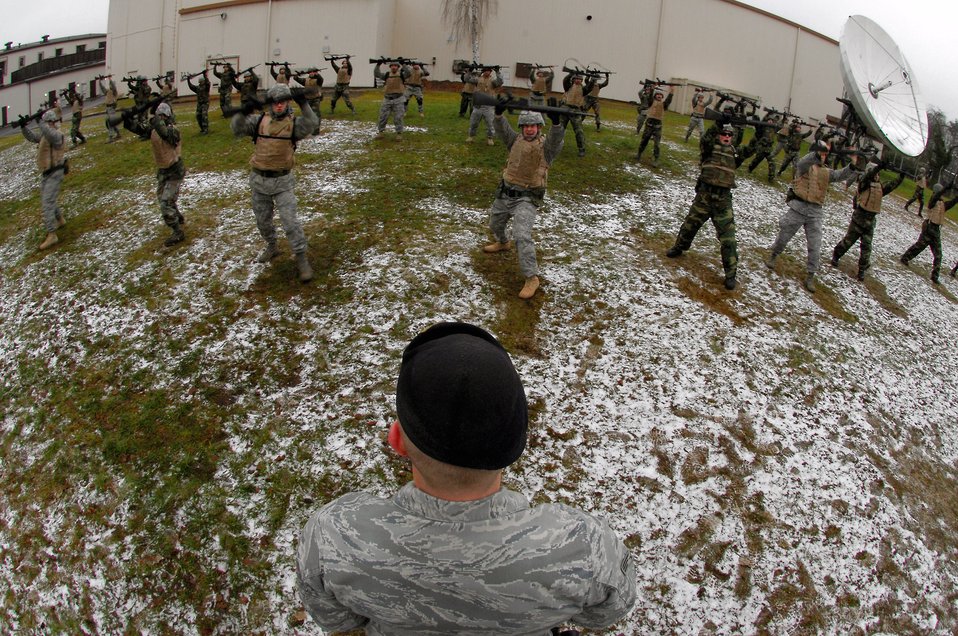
Ready!

Senior Airman Chris Bidwell, a Combat Skills Training Instructor, leads Airmen in various drills Dec. 18 at Einseidlerhof, Germany. Airmen participated in a two-day Combat Skills Training course in preparation for deployment.